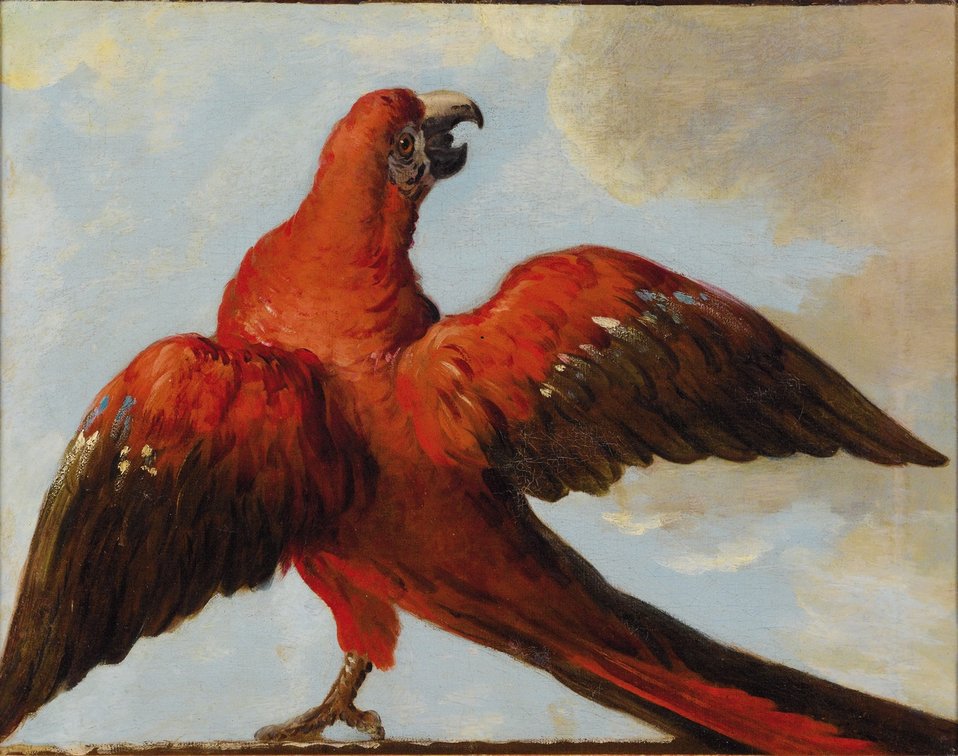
'Parrot with Open Wings', attributed to Jean-Baptiste Oudry